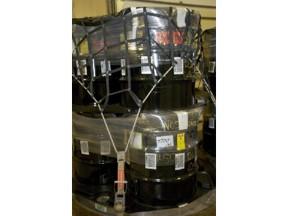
WIPP 100-gallon drums

Labeled 100-gallon drums showing the approximate container weight are staged at the Waste Isolation Pilot Plant in Carlsbad, NM for downloading and emplacement in the underground repository.